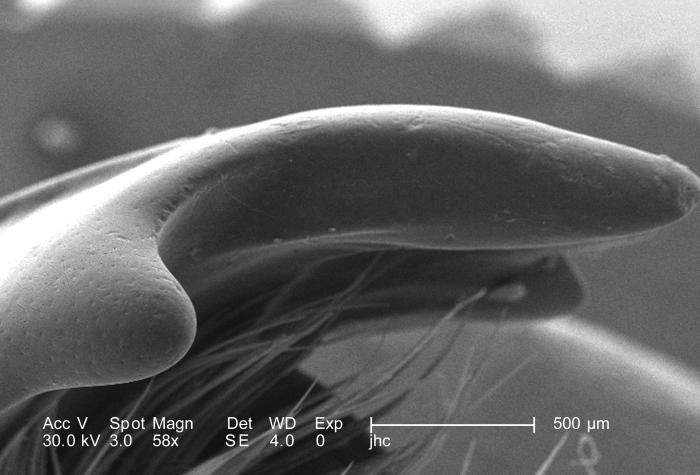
Under a low magnification of 58X this scanning electron micrograph (SEM) depicted some of the exoskeletal morphologic characteristics displayed on the head region of an unidentified beetle found deceased in the suburbs of Decatur, Georgia. In this particular view, were protuberances emanating from one of the insect's mandibles.